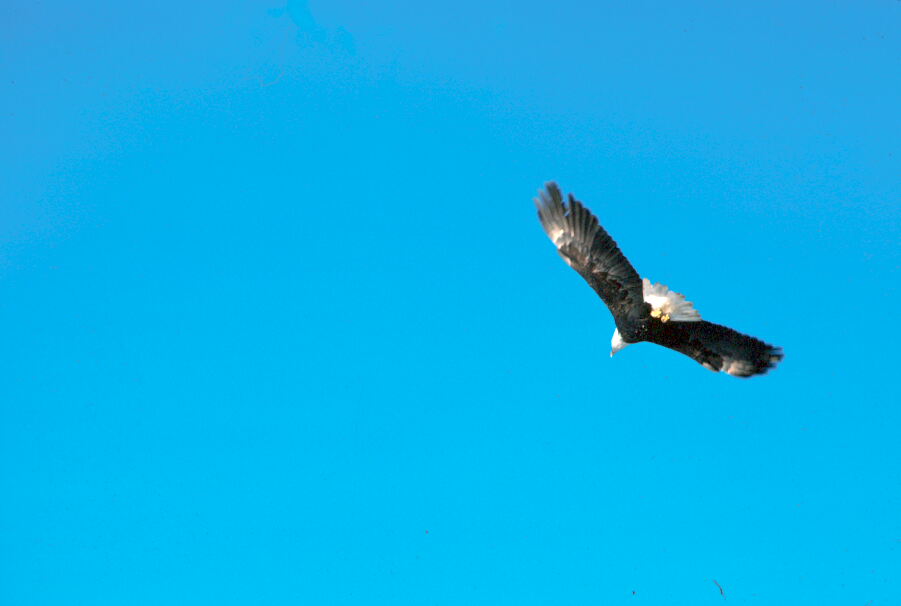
Bald Eagle.